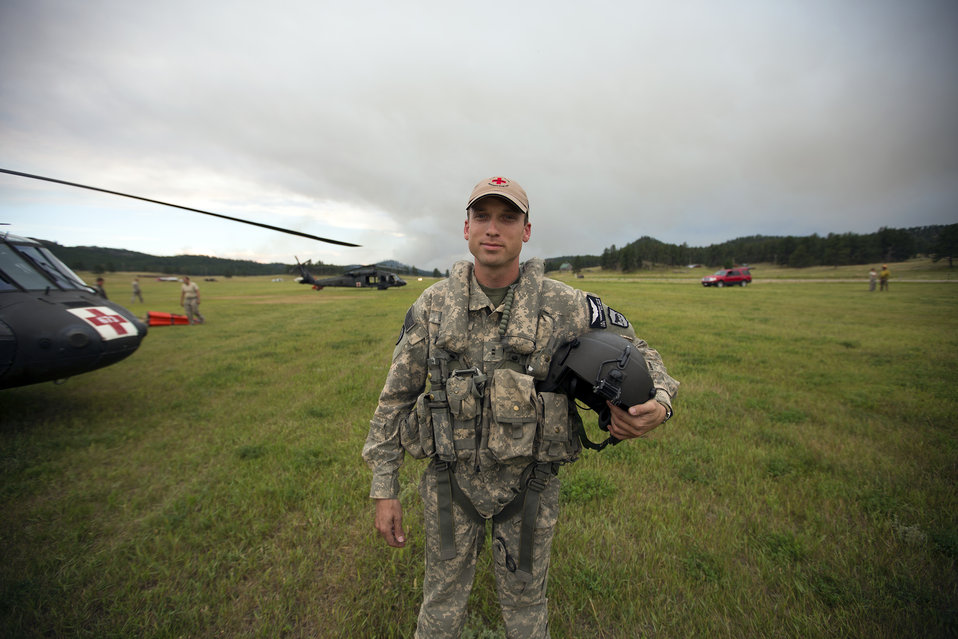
SD Air National Guard U.S. Army UH-60 Black Hawk pilot Chief Warrant Officer 2 Joshua Otto flies water-bucket drop operations at the Myrtle Fire in Black Hills National Forest, SD on July 23, 2012.